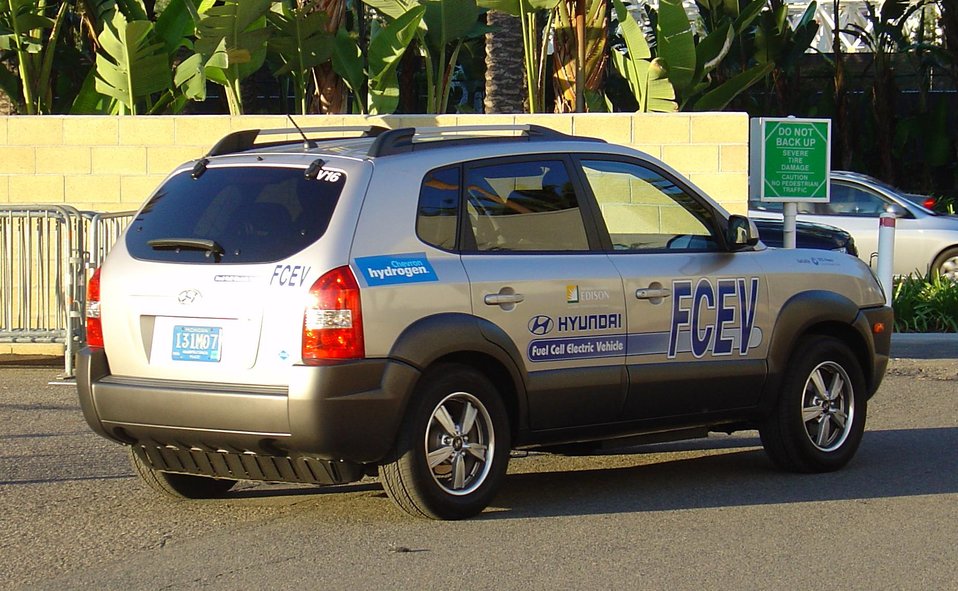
Hyundai FCV ( fuel cell vehicle) 2008 at the EVS23 conference in Anaheim, California.

Fuel cells combine hydrogen with oxygen from the air to create electricity, which powers vehicles by means of electric motors. Because there is not combustion in the process, there are no other emissions, making fuel cells an extremely clean and renewable source of electricity.